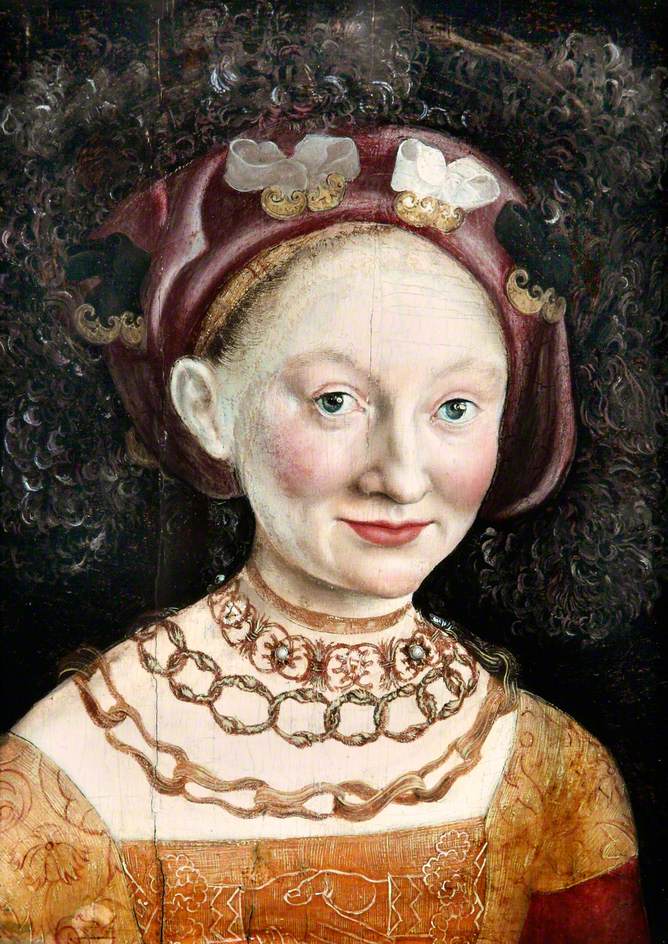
'Princess Emilia of Saxony', by Hans Krell (about 1530) Liverpool museums